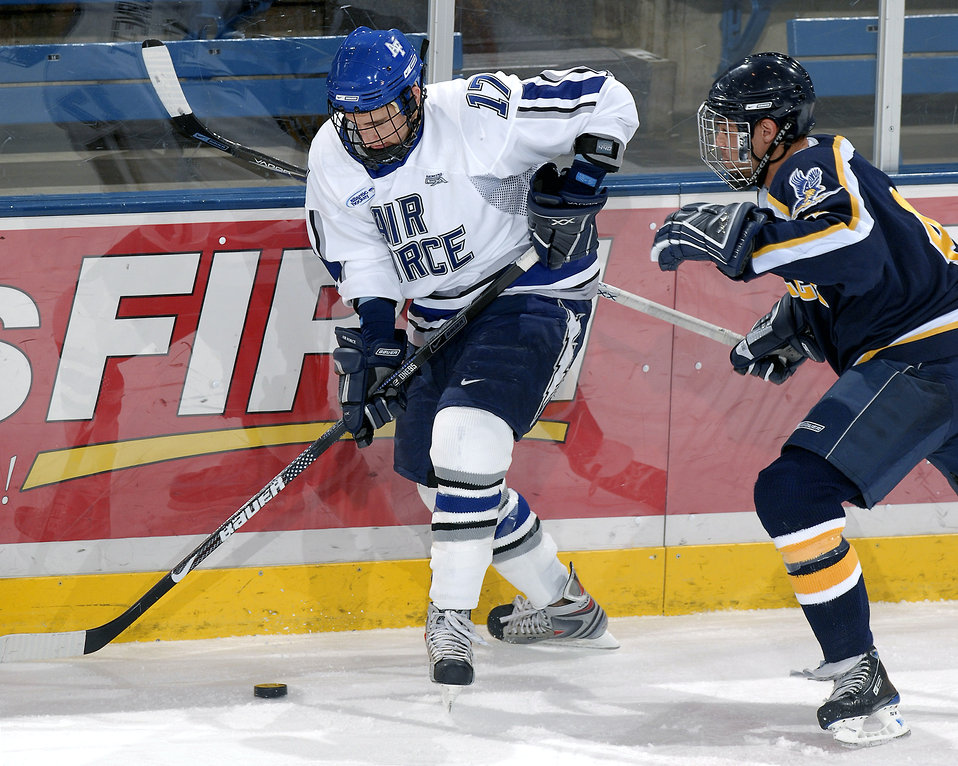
Air Force remains perfect at 8-0

Air Force Academy forward Derrick Burnett works the puck around a Bentley College defender during action Oct. 31 at the Academy's Cadet Ice Arena in Colorado Springs, Colo. Air Force went on to defeat Bentley 5-1. The next evening, the Academy skaters defeated Bentley 8-2, giving them a perfect 8-0 start, which ties a school record set in 1971-72. Air Force currently is ranked 14th in the nation.